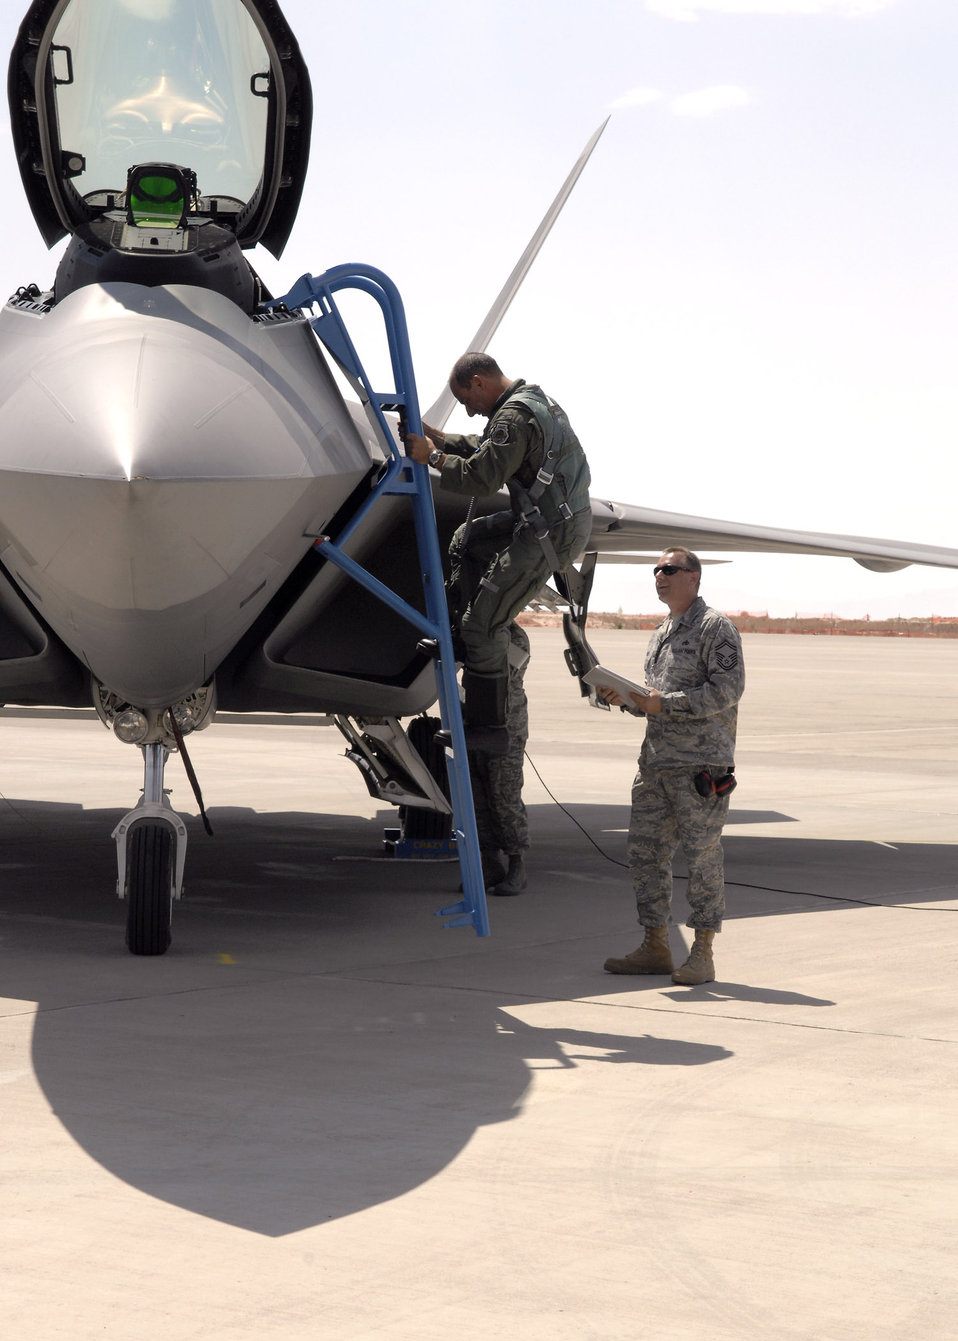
Raptors arrive at Holloman

Col. Jeff Harrigian steps out of an F-22 Raptor June 2 at Holloman Air Force Base, N.M. The F-22 isnow assigned to Holloman AFB. Colonel Harrigan is the 49th Fighter Wing commander.